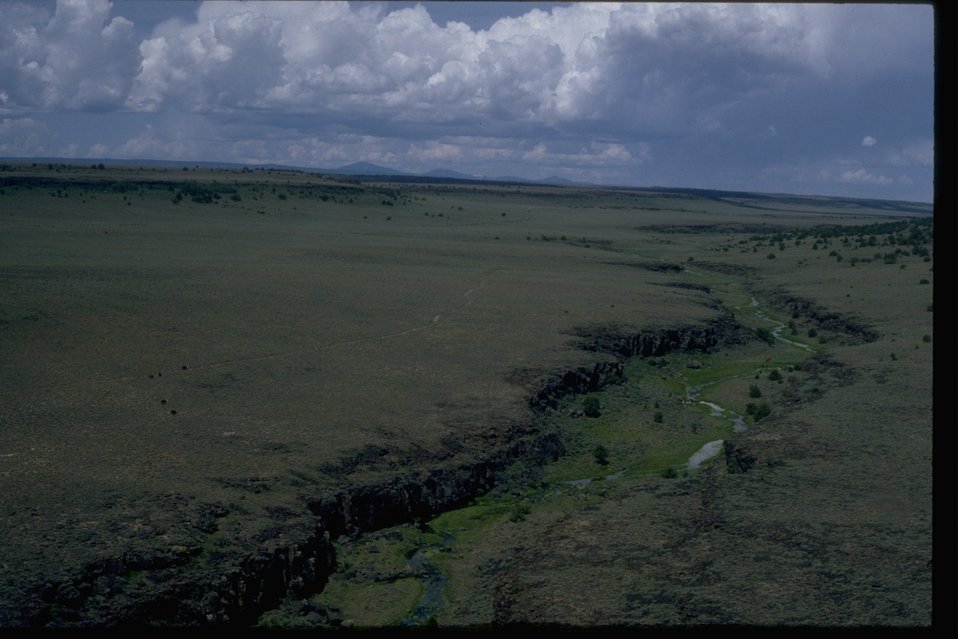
Aerial of Guano Creek. OR 1-132